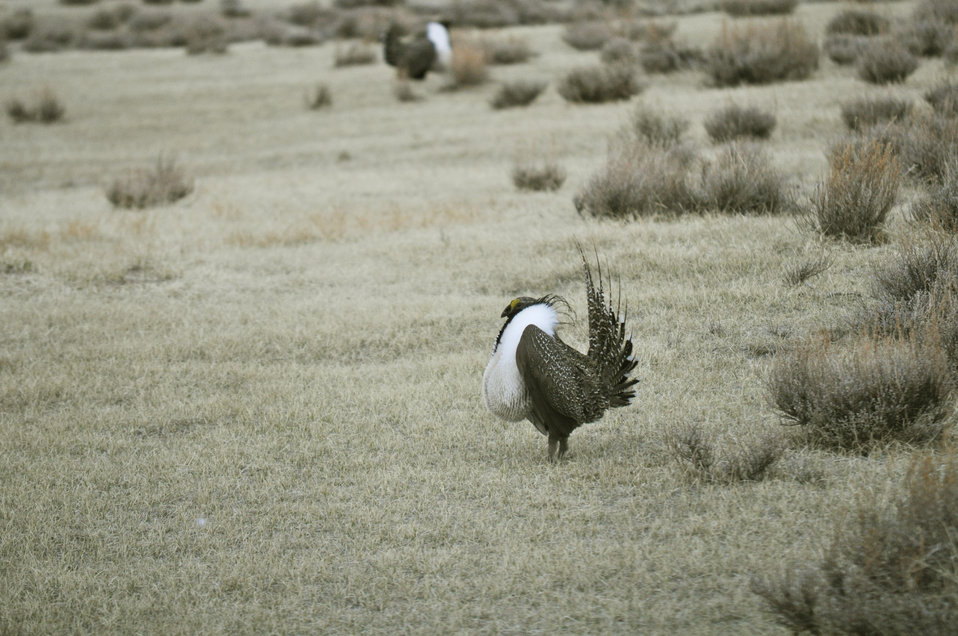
Male greater sage-grouse strut at lek (dancing or mating grounds) to attract females near Bodie, California.